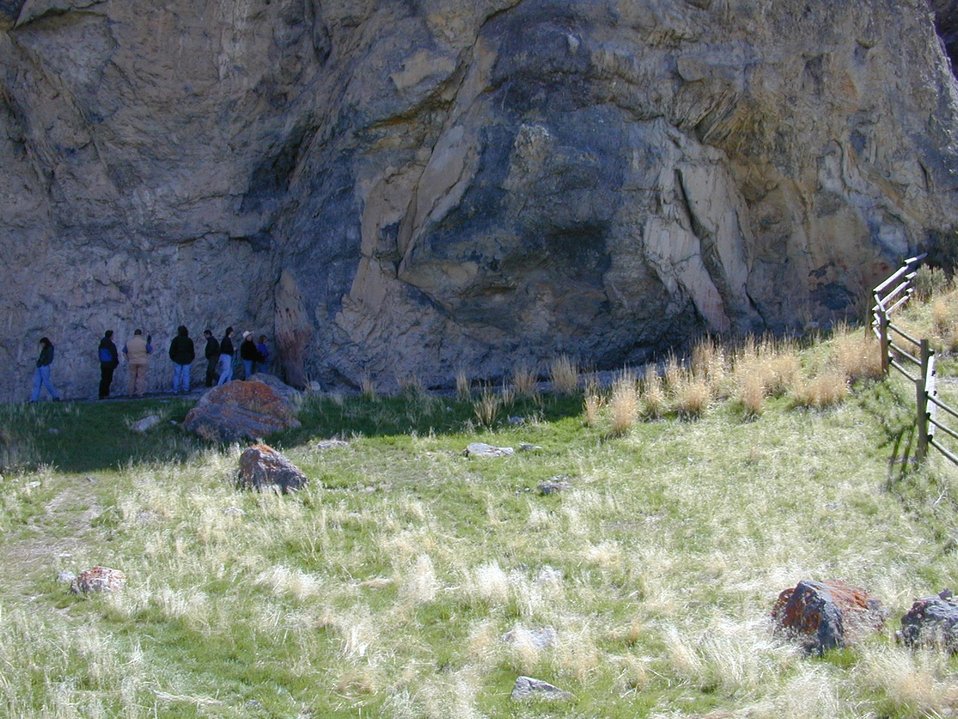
Birch Creek Valley Idaho Falls Field Office USRD Upper Snake River District